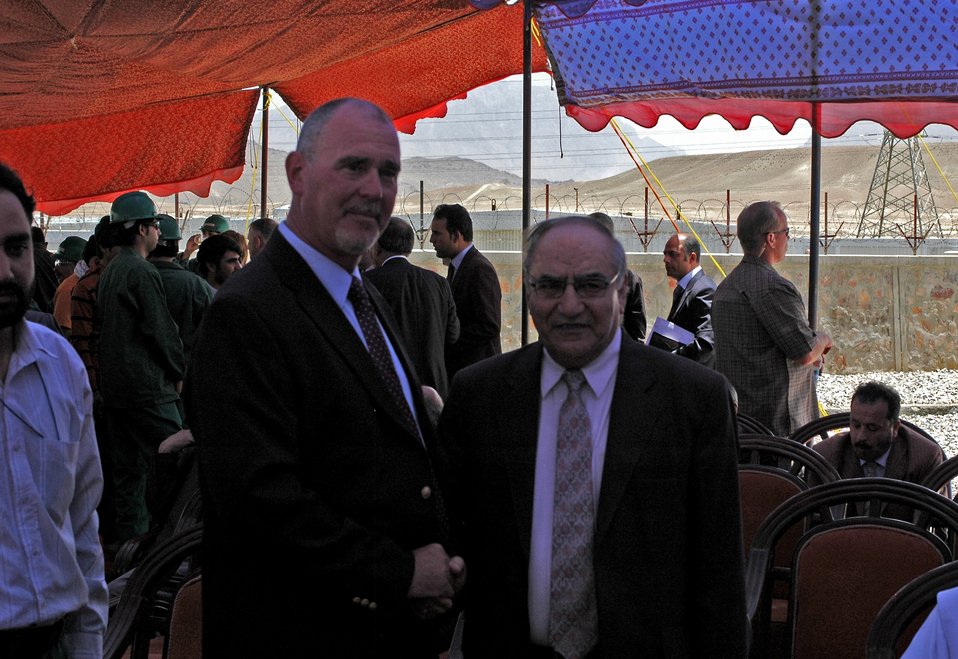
105 MW Tarakhil Power Plant Handover